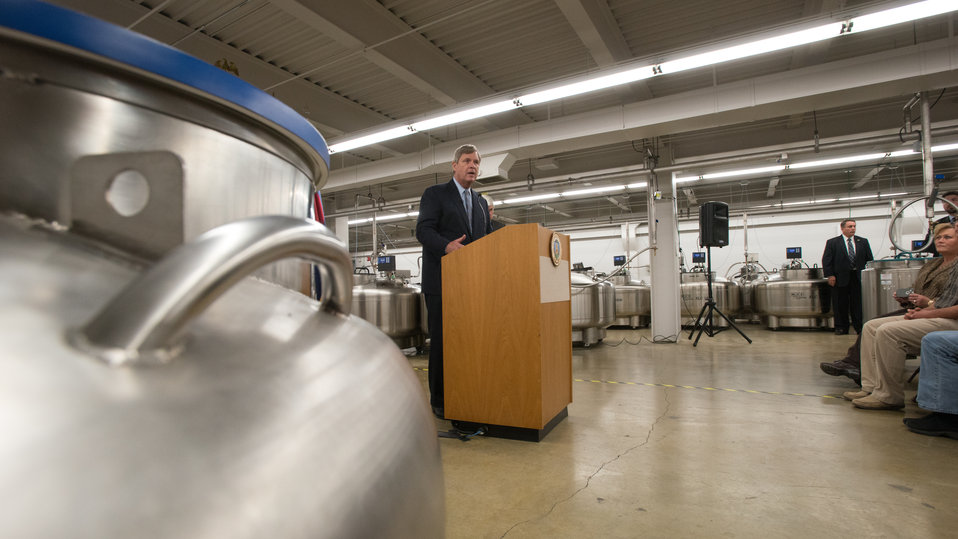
Agriculture Secretary Tom Vilsack speaks to staff and media at the U.S. Department of Agriculture's (USDA) Agricultural Research Service (ARS) National Center for Genetic Resources Preservation (NCGRP) in Ft. Collins, CO on Wednesday, Nov. 6, 2013. NCGRP is the largest agricultural gene bank facility in the U.S. The NCGRP staff conducts groundbreaking research to develop more efficient and effective means for preserving plant and animal germplasm, and for better understanding the genetic structure of these invaluable materials. Gene banks around the world have adopted the research findings, preservation techniques, and specialized technology developed by the NCGRP: many international scientists travel to the NCGRP for research and training.